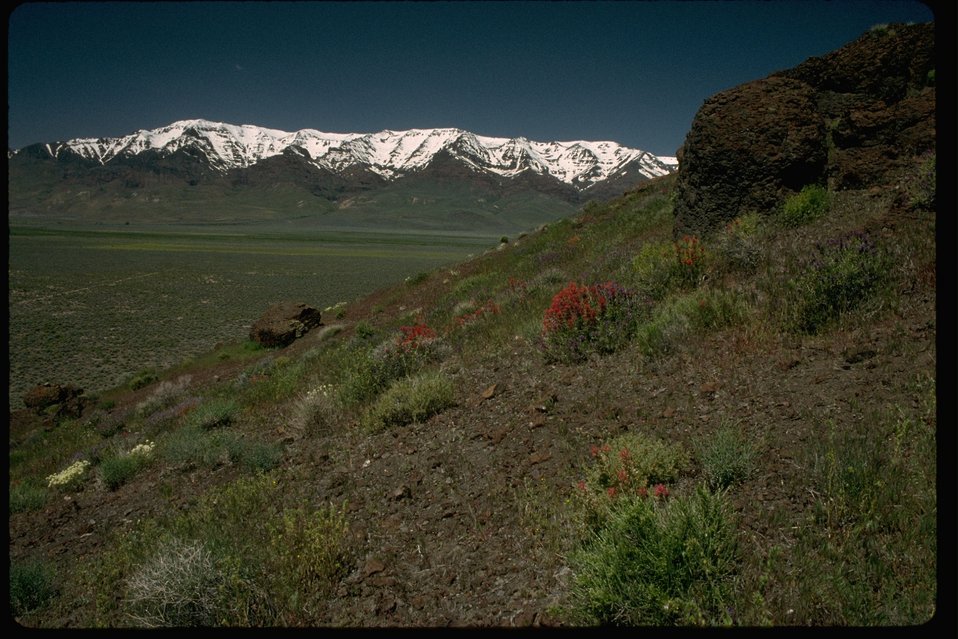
East face of Steens Mountain from Mickey Basin Road in the Alvord Desert area of Southeastern Oregon.